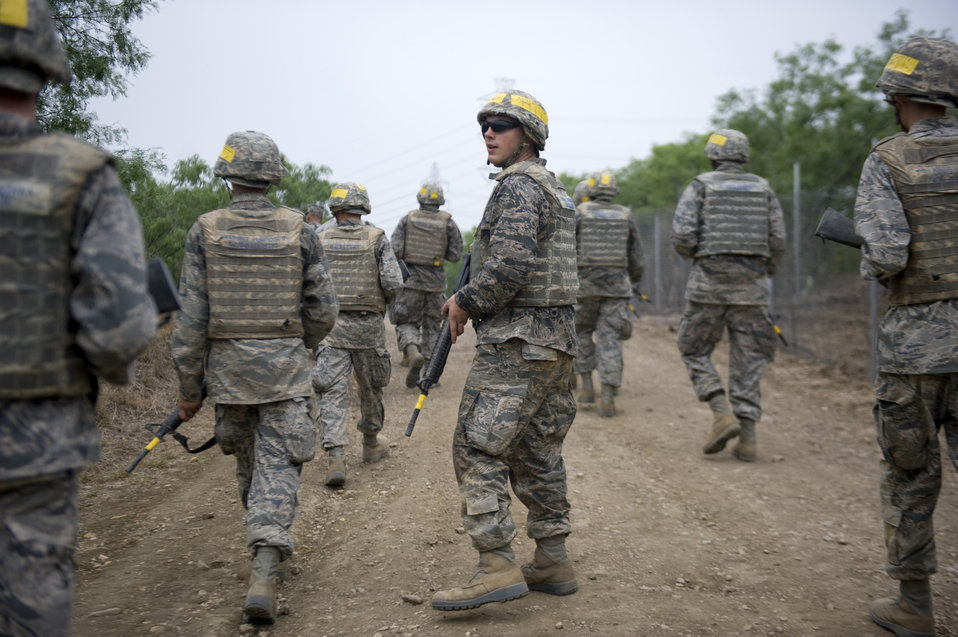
BEAST

Basic trainees go through their sixth week of Air Force basic military training at the Basic Expeditionary Airman Skills Training on May 25, 2011, at Lackland Air Force Base, Texas.